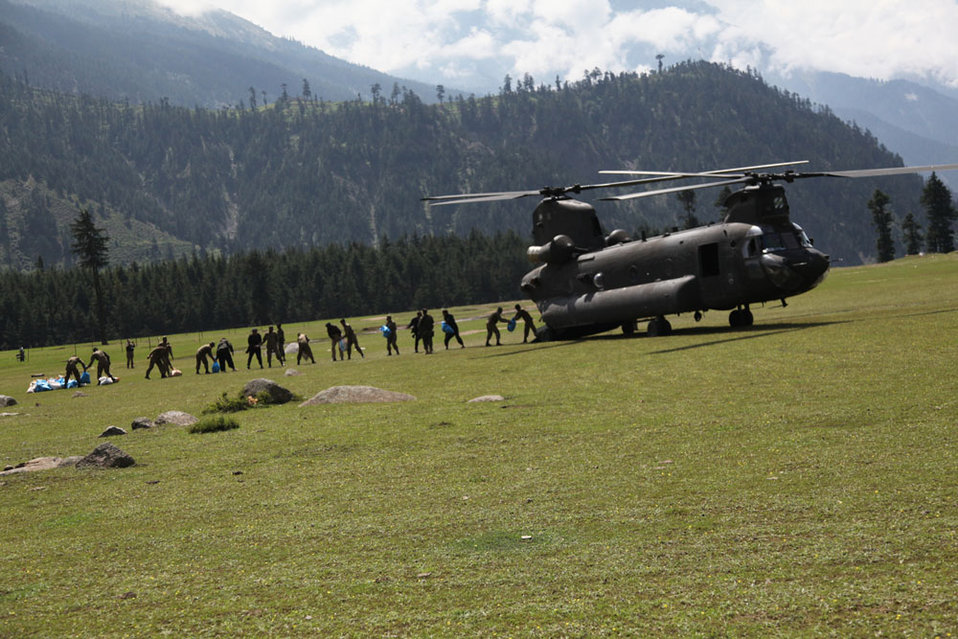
Members of the Pakistan military form a chain to unload sacks of grain from the back of a U.S. Army Chinook (CH-47) helicopter, to be delivered as part of the disaster relief effort to help the flood victims from the town of Khyber, Khyber Pakhtunkhwa Province (formerly North West Frontier Province), Pakistan, on August 5, 2010.